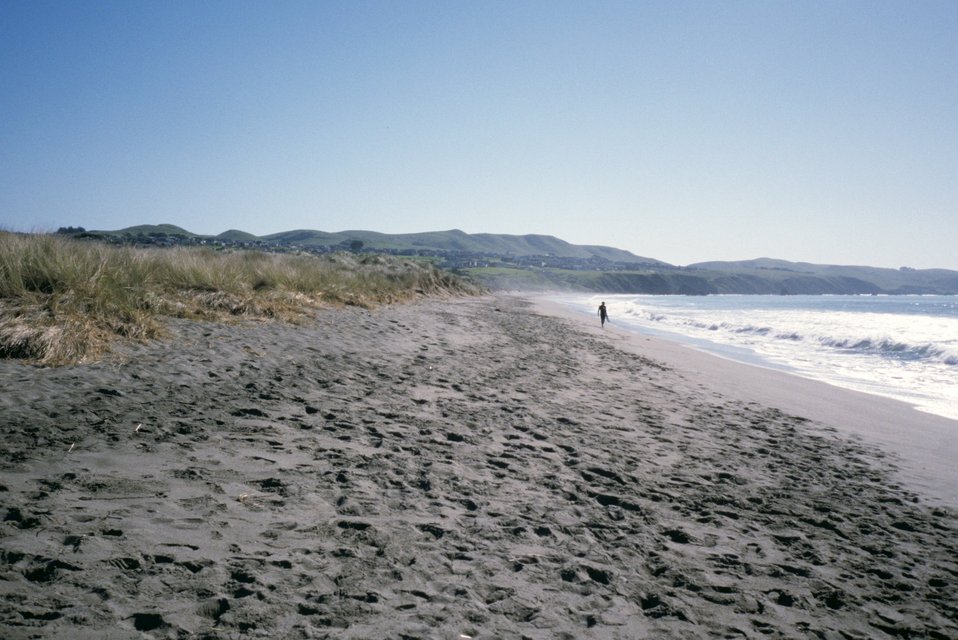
Doran Beach